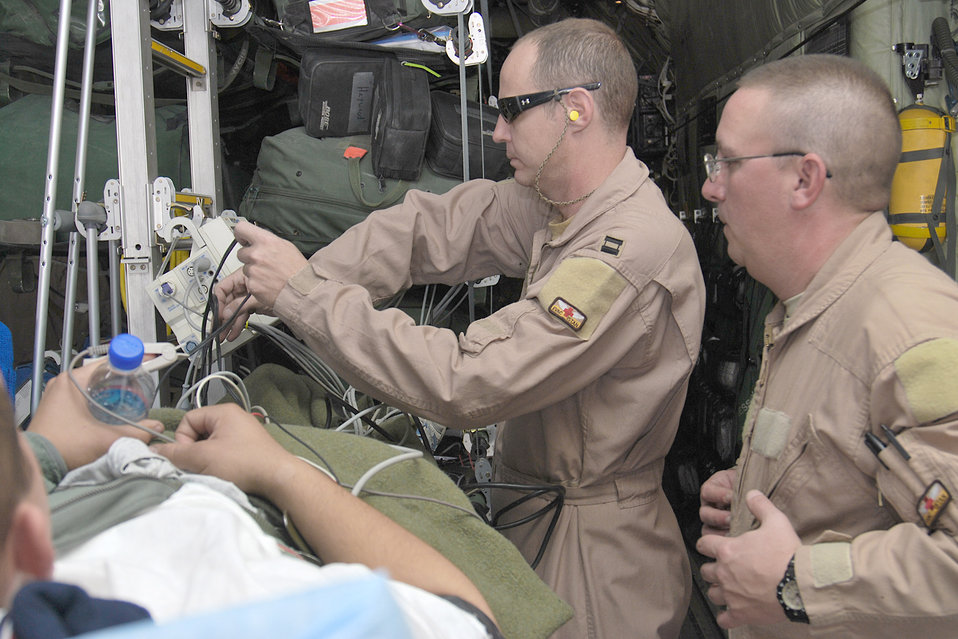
451st AEW CCATT

Members of the 451st Expeditionary Aeromedical Evacuation Squadron Critical Care Air Transport Team work together to load patients onto a C-130H Hercules for an aeromedical evacuation Jan. 5, 2011, at Kandahar Airfield, Afghanistan. The CCATT is a specialized three-person team that recreates an intensive care unit environment within an aircraft during aeromedical evacuations.